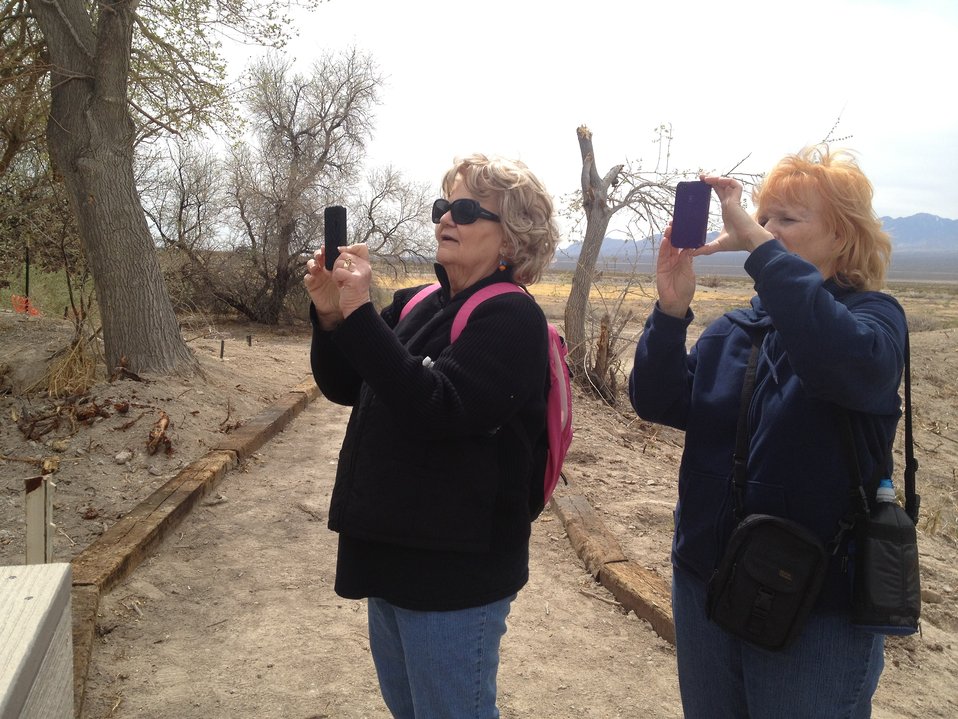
smartphone cameras on refuge

Marilyn Parker, left, and Liz Reeder, right, use their smartphone cameras at Desert National Wildlife Refuge in New Mexico to take and share photos during a special event with a local photographer and artist. (USFWS)